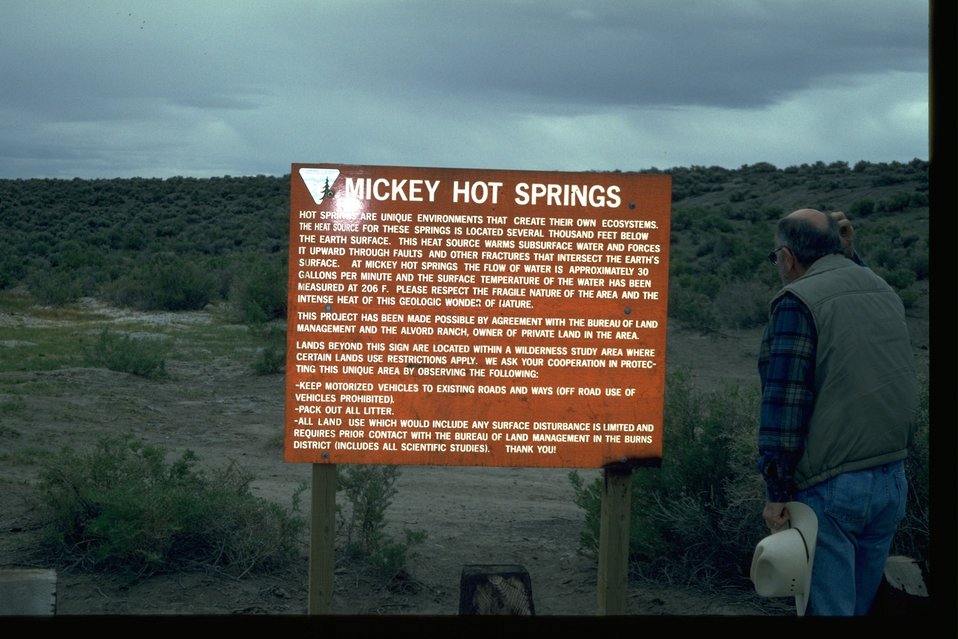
Interpretive panel at Mickey Hot Springs.